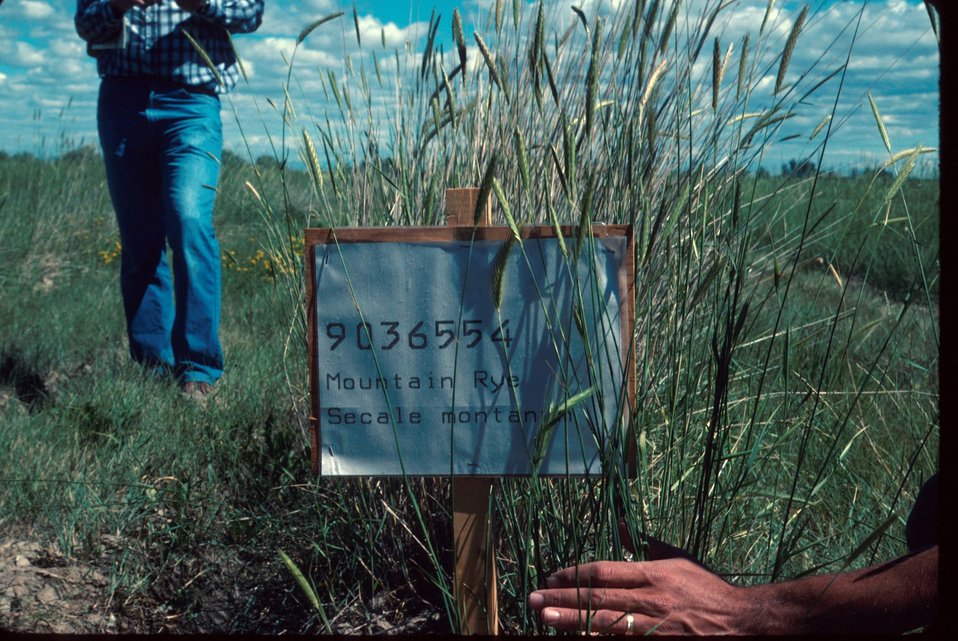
Mt. Rye Grass Elymus,